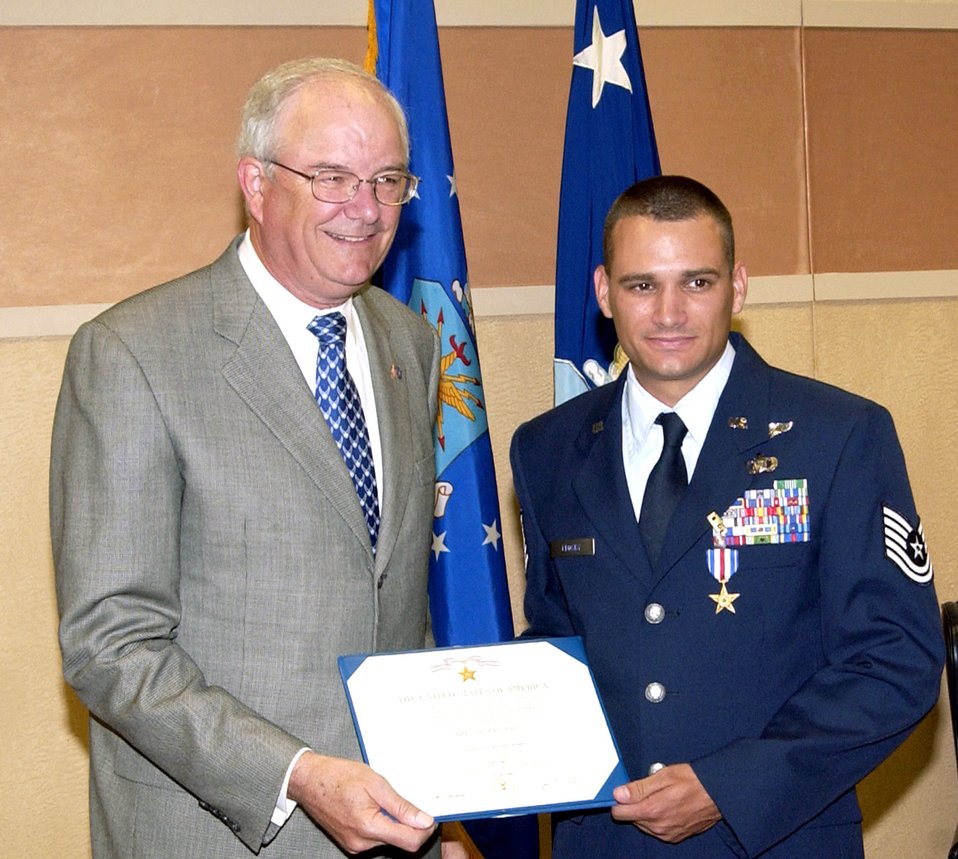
Silver Star awarded

Secretary of the Air Force Michael Wynne presents Tech. Sgt. Travis Crosby with the Silver Star during a ceremony on Monday, June 26, at Pope Air Force Base, N.C., for heroic actions while deployed in support of Operation Iraqi Freedom in 2003. Sergeant Crosby is a member of a tactical air control party with the 15th Air Support Operations Squadron.